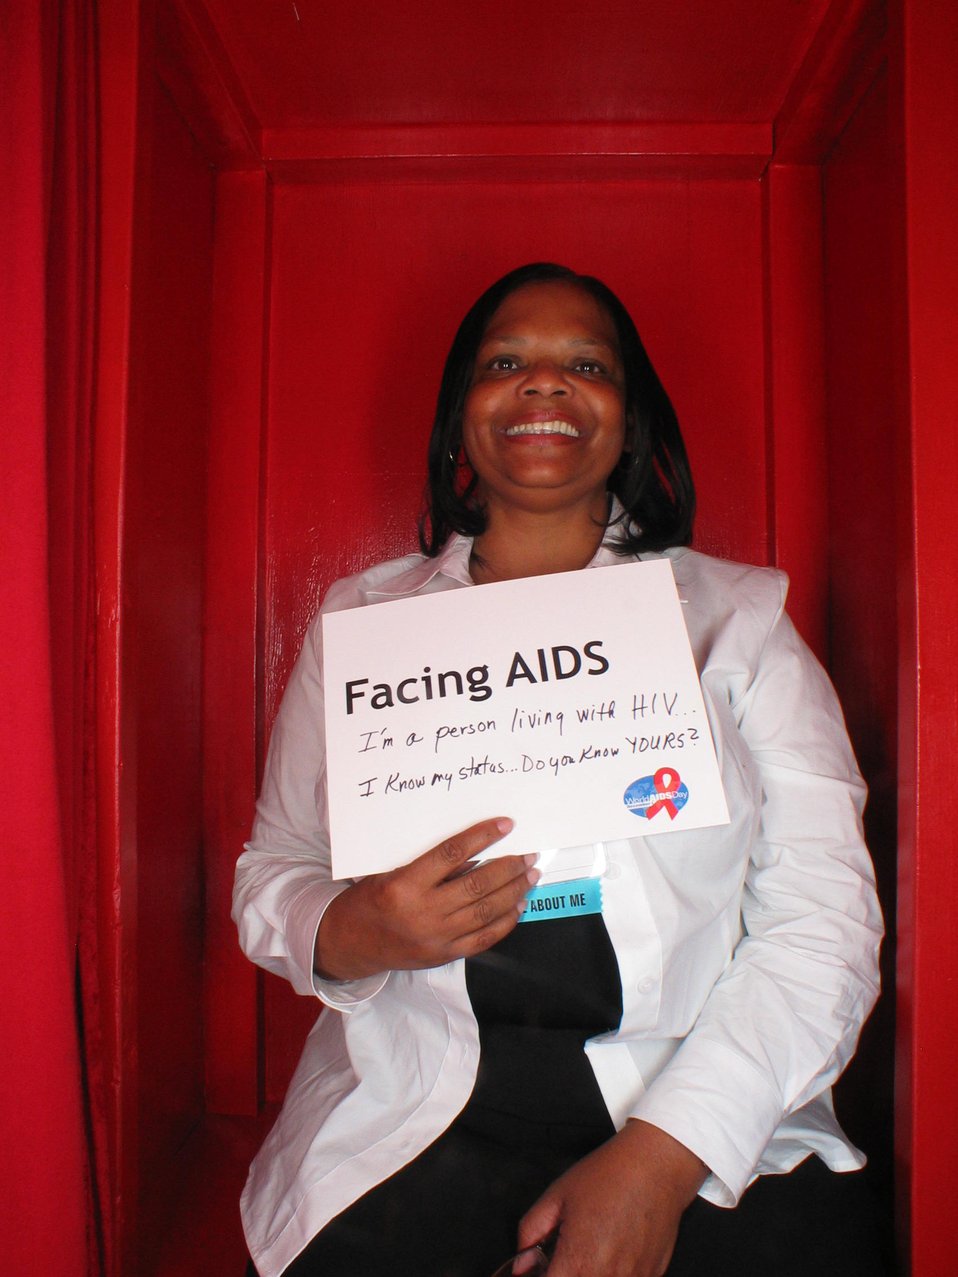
Facing AIDS I'm a person living with HIV. I know my status...do you know YOURS?